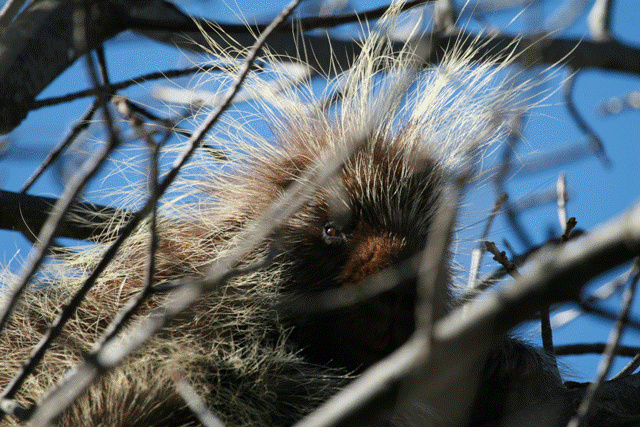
Bad Hair Day? Porcupine (Erethizon dorsatum)

The porcupine is one of the larger rodents, second to the beaver. It is also the only native North American mammal with antibiotics in its skin. These antibiotics prevent infection when a porcupine falls out of a tree and is stuck with its own quills upon hitting the ground.